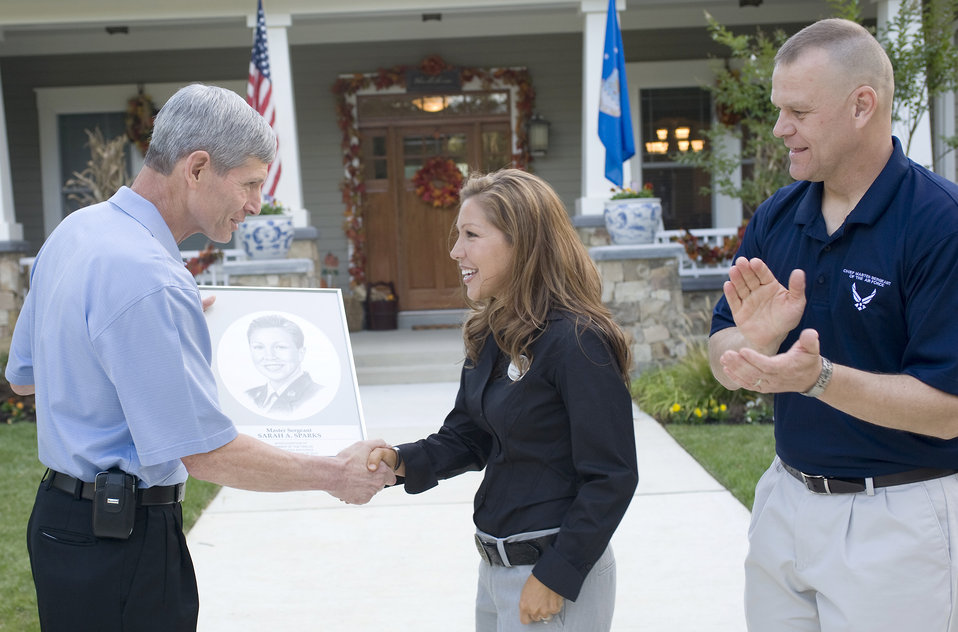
Social starts week celebrating outstanding Airmen

Air Force Chief of Staff Gen. Norton Schwartz (left) and Chief Master Sgt. of the Air Force James Roy congratulate Senior Master Sgt. Sarah Sparks, one of the 12 Outstanding Airmen of the Year, Sept. 11, 2010, at Airey House on Andrews Air Force Base, Md. Chief Roy hosted a social in honor of the Airmen. This awards program began in 1956. Each year the program recognizes 12 enlisted Airmen for their superior leadership, job performance, community involvement and personal achievements.